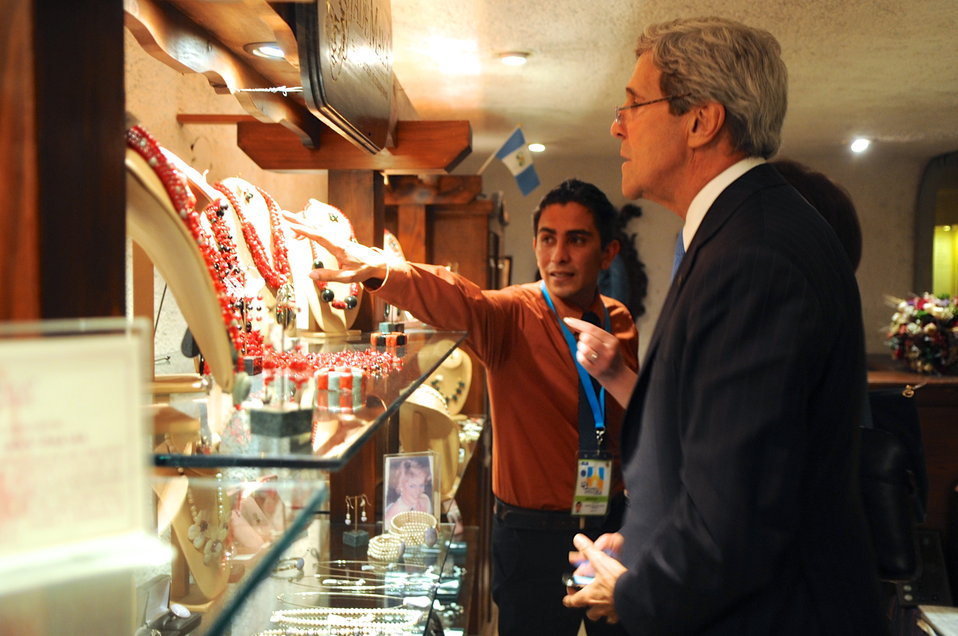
Secretary Kerry Admires Guatemalan Jewelry

U.S. Secretary of State John Kerry listens as a shopkeeper describes jewelry he spotted during a break between Organization of American States meetings in Antigua, Guatemala, on June 4, 2013.